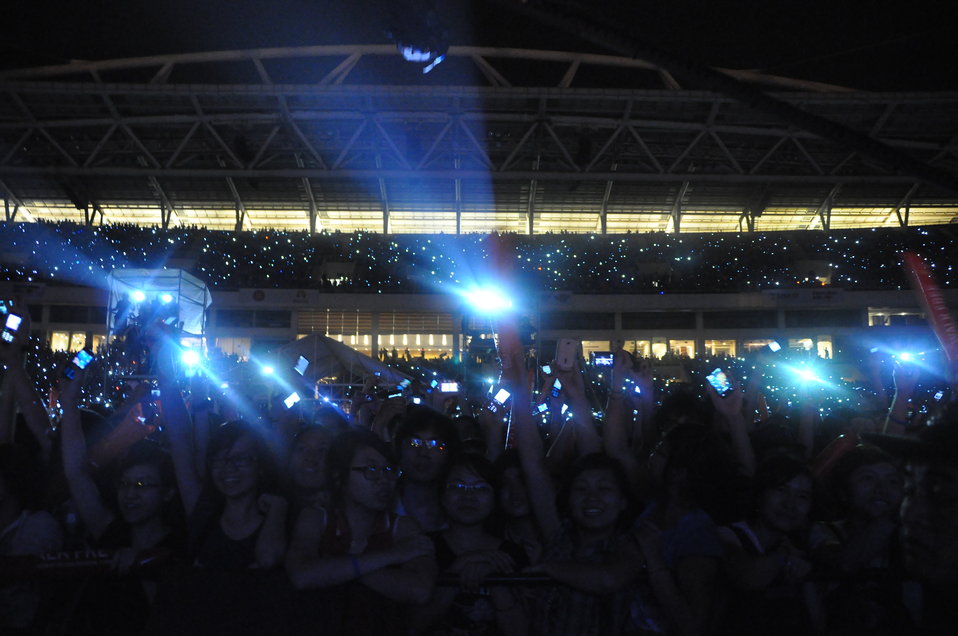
Crowds come out in huge numbers to My Dinh Stadium

USAID co-sponsors MTV EXIT concert, campaign against human trafficking